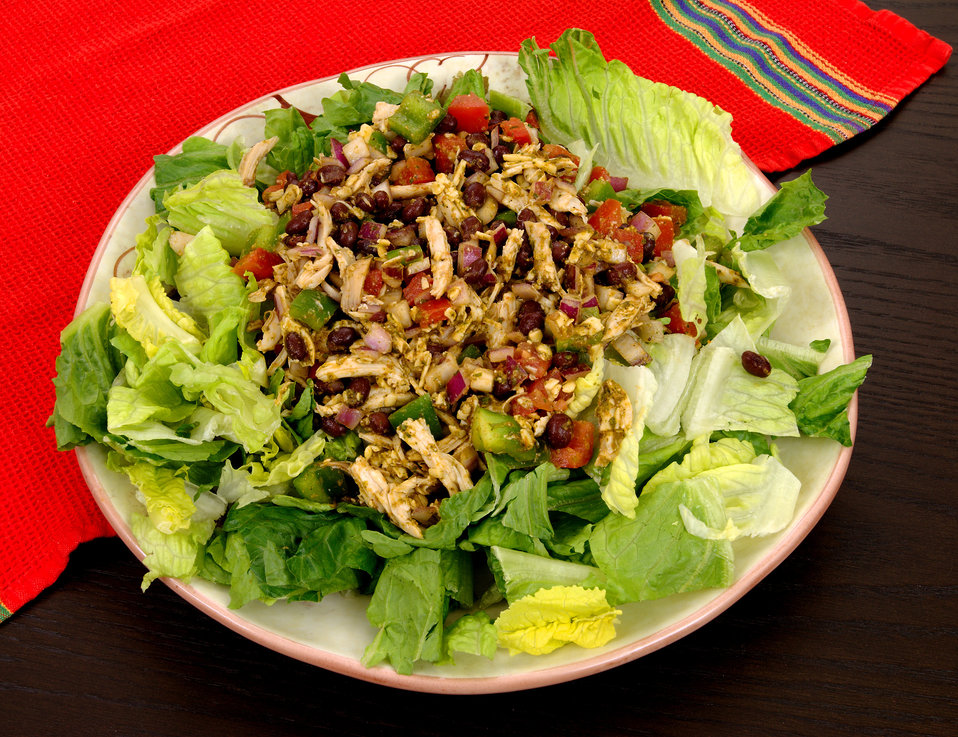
This photograph depicts a mixed greens salad topped with a colorful chicken salad, which included cranberries, tomatoes, and onions.